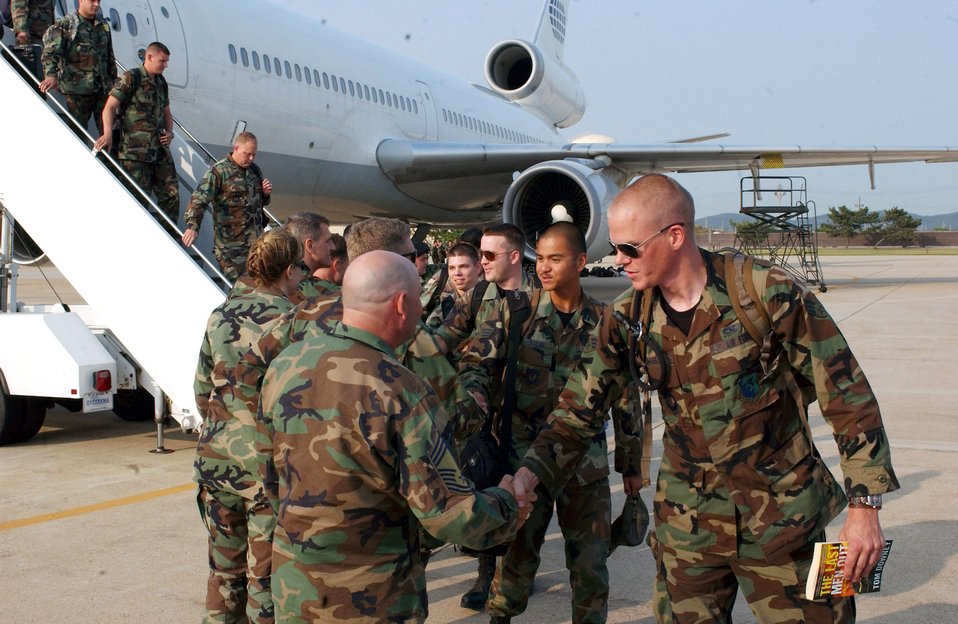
USAFE fighter squadron deploys to Kunsan

Airmen from the 555th Fighter Squadron from Aviano Air Base, Italy, load onto a bus June 18 at Kunsan Air Base, South Korea. Aviano AB Airmen are here for a 120-day deployment. This is the first time a U.S. Air Forces in Europe fighter unit has deployed to a Pacific Air Force base.